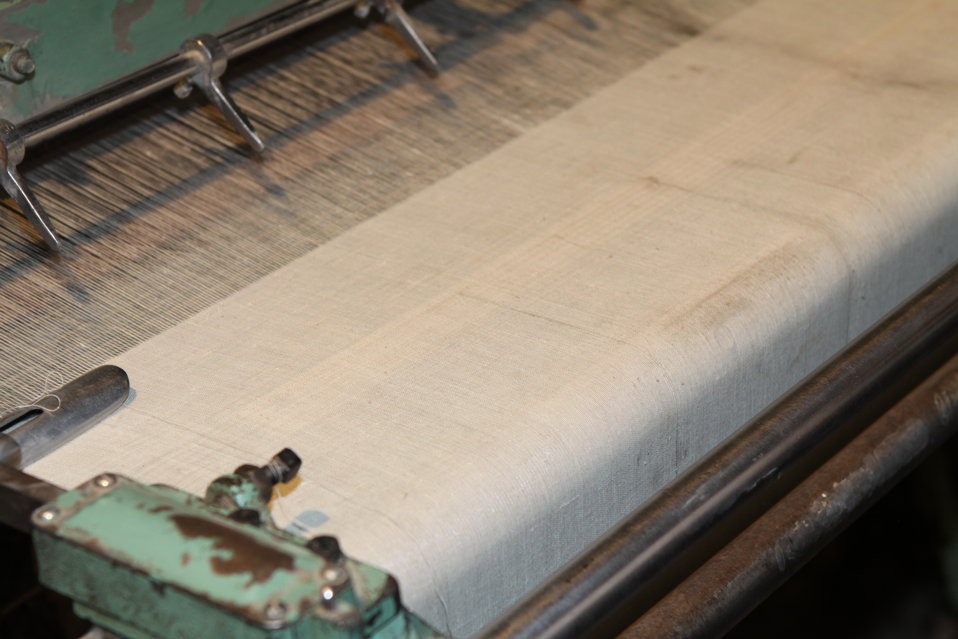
100525 Hirat Textile Company 742